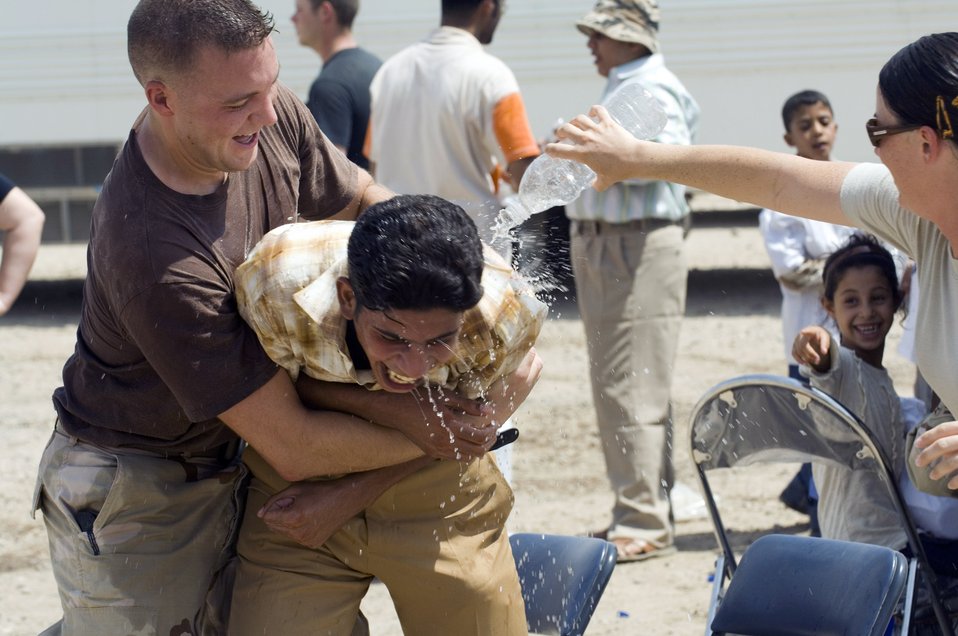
Americans, Iraqis interact at historical monument

Senior Airman Paul Waldrep holds a young Iraqi boy while Senior Airman Charmaine Garza pours water on him Aug. 21 during a water fight at the Ziggurat in the ancient city of Ur located on Ali Base, Iraq. The boy was one of 80 Iraqi citizens who visited the historical Ziggurat and interact with Airmen from Ali Base. The Ali First Four Council sponsored the visit. This was the first time in more than 10 years that Iraqi civilians have been allowed to step on the grounds of the historical sight, which includes the house of the biblical prophet Abraham. Airman Waldrep is a member of the 407th Expeditionary Civil Engineer Squadron, and Airman Garza is a member of the Expeditionary Security Forces Squadron.